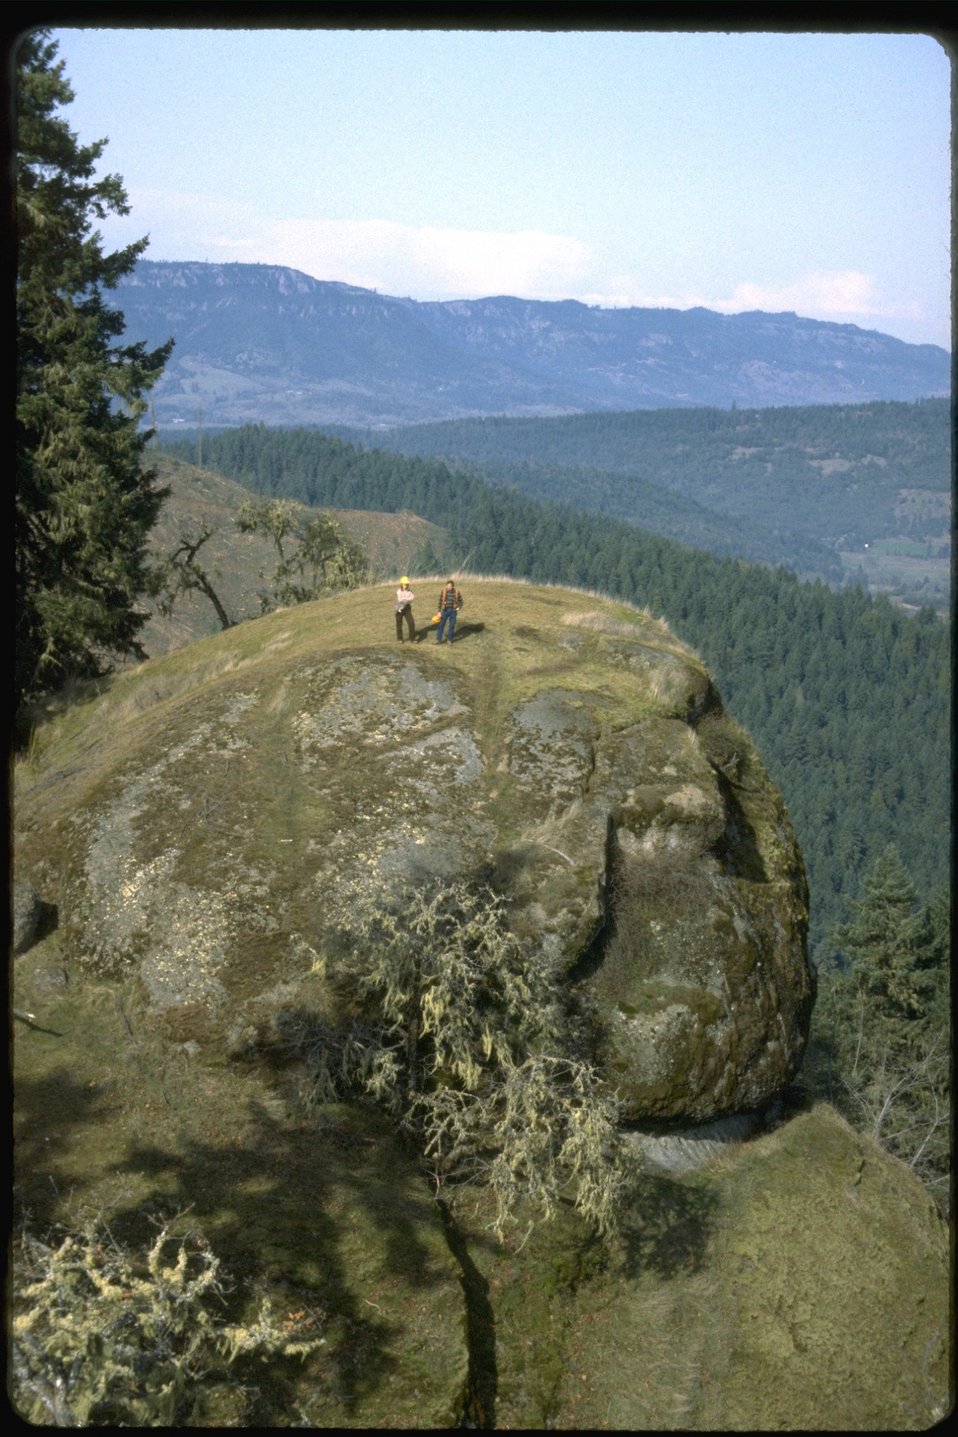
Hikers standing on large boulder overlooking timber area.